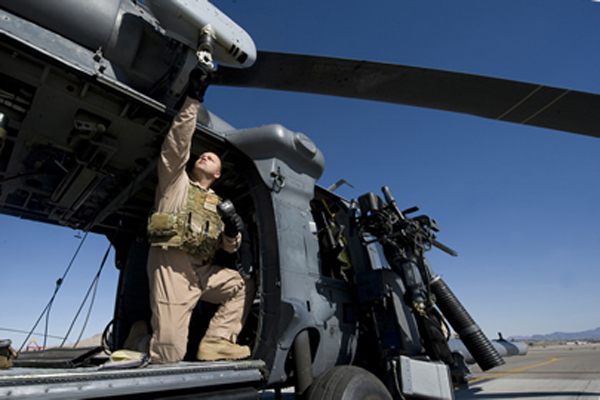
Wounded Warrior

U.S. Air Force Staff Sgt. David Mullikin grabs the hoist of an HH-60 Pavehawk, Nellis Air Force Base, Nev., June 23. Sergeant Mullikin is a flight engineer assigned to the 66th Rescue Squadron.